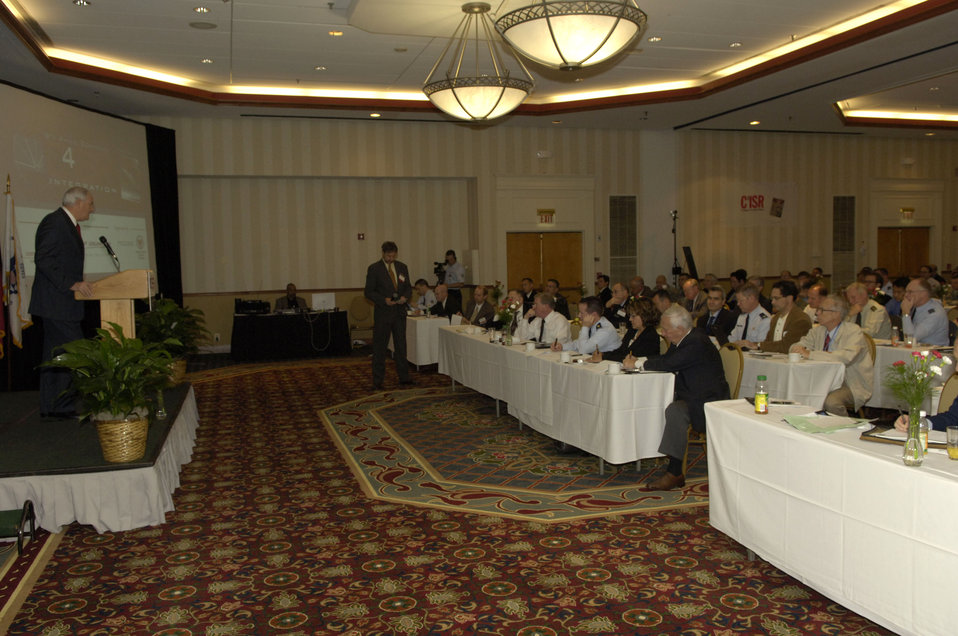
8th Air Force to become new cyber command

Secretary of the Air Force Michael W. Wynne announces that 8th Air Force would become the new Air Force Cyberspace Command at the 6th Annual C4ISR Integration Conference in Crystal City, Va., Nov. 2. Cyberspace Command will be led by Lt. Gen. Robert J. Elder Jr.